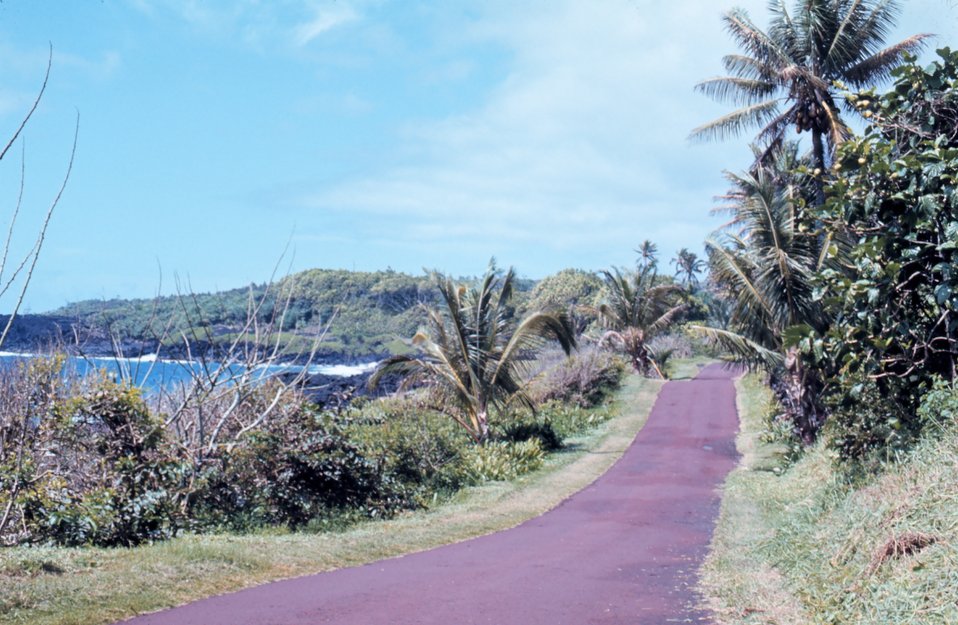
One-lane seaside road